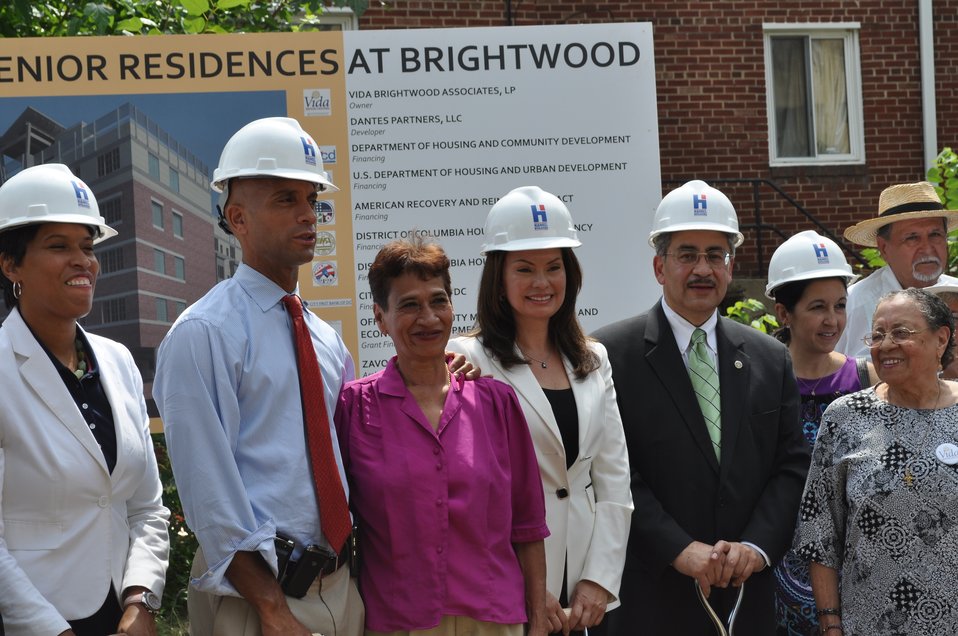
Treasurer Rios at a groundbreaking on new Vida Senior Residence funded in part by the Recovery Act, 7/27/2010

Ward 4 Counceilmember Muriel Bowser, DC Mayor Adrian Fenty, Treasurer Rosie Rios and executive director of Vida Senior Centers Angel Luis Irene with community members and seniors officially breaking ground for construction of the project which is financed in part with $6.8 million of Recovery Act funds from the 1602 grants in lieu of low-income housing tax credits program.